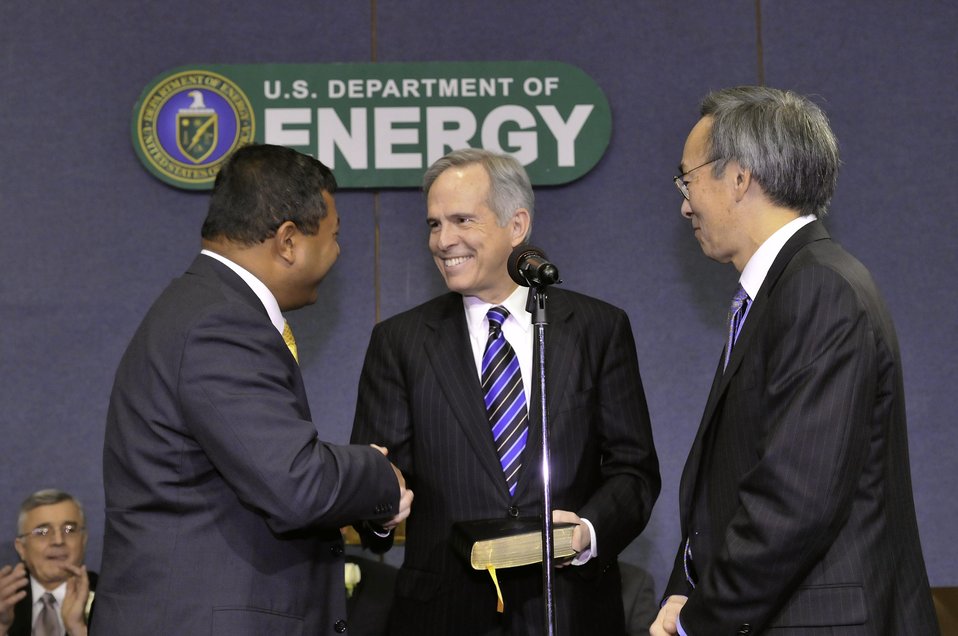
DDFCF~1